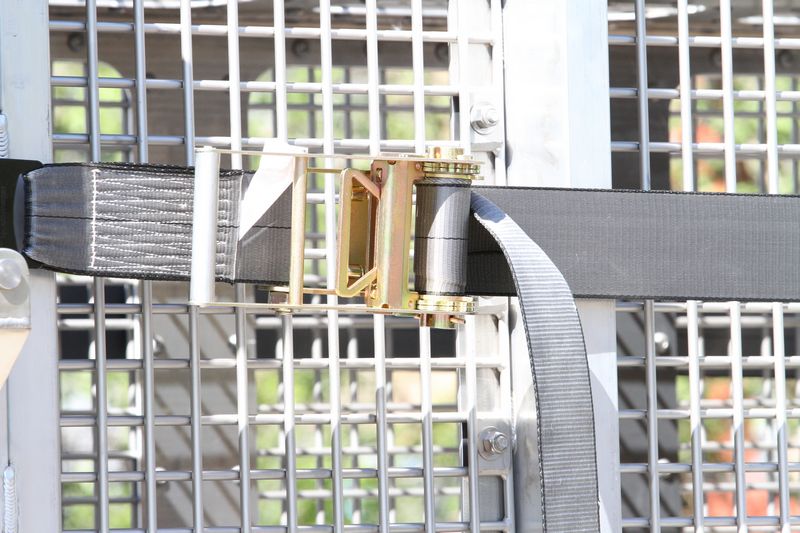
Press Conference on the polar bear holding module. USFWS/Rose Primmer